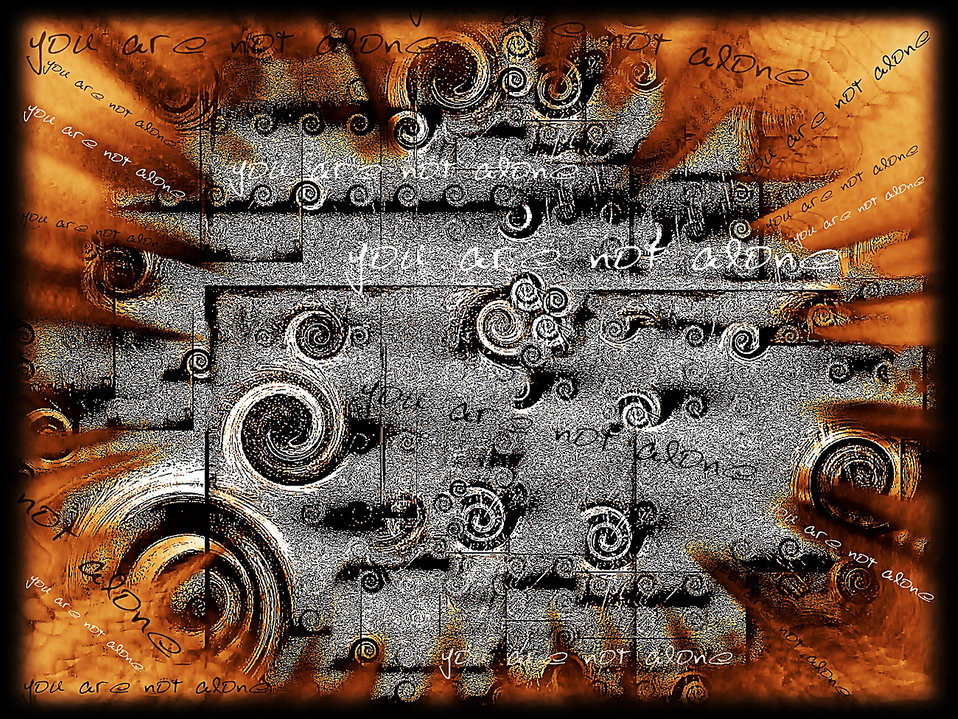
You are not alone

Background.